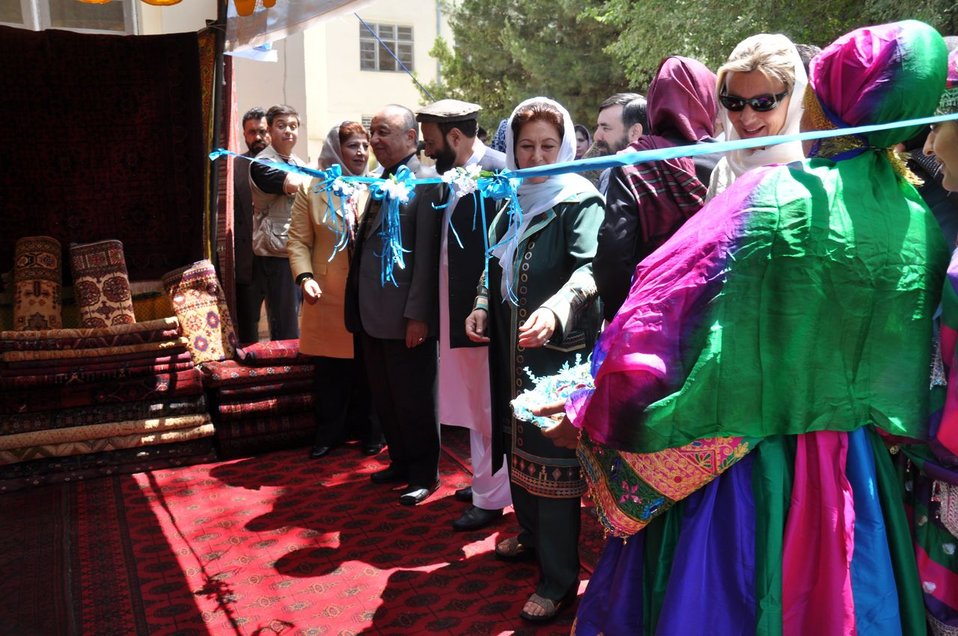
Mother's Day in Afghanistan

Minister of Women's Affairs Husan Bano Ghazanfar cuts the ribbon in honor of the Mother's Day bazaar held at the Ministry.